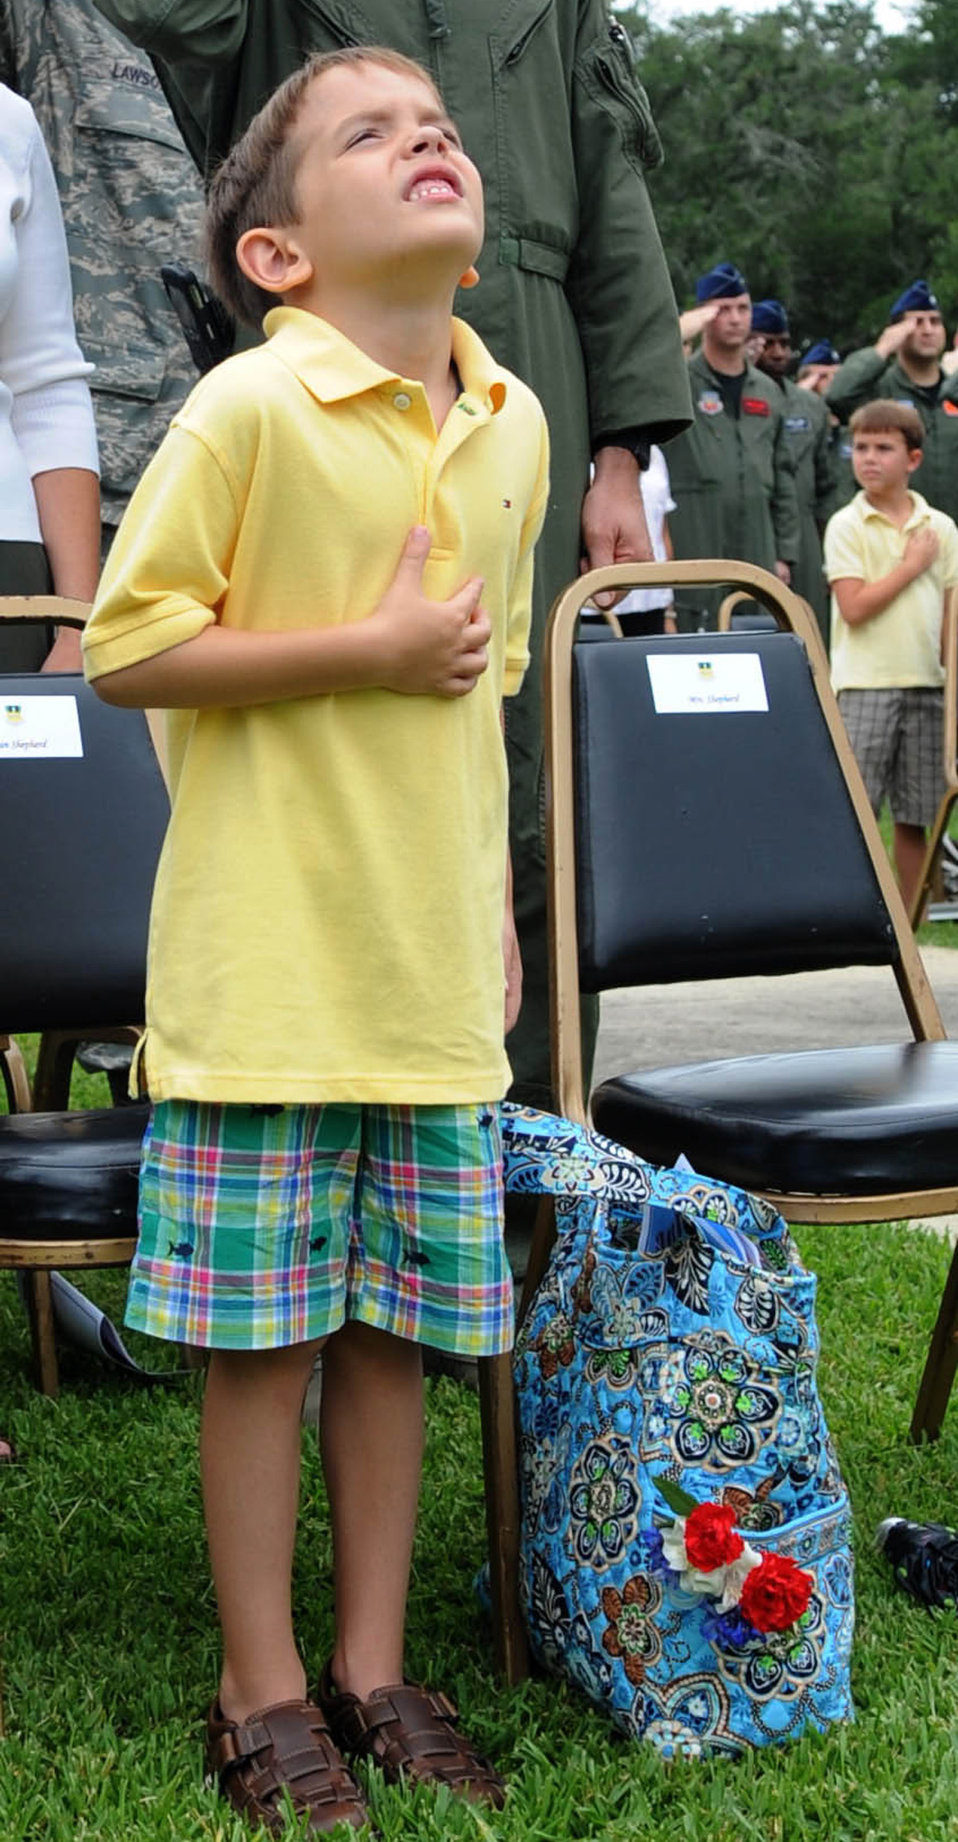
Remembering RAIDR 21

Noah, son of 1st Lt. Joshua Shepherd, places his hand over his heart during the playing of the national anthem as the flag is raised at the 2nd Bomb Wing flag pole July 21 during the RAIDR 21 Remembrance Ceremony. More than 200 Airmen, friends and family members attended the ceremony to remember the six fallen aircrew members who died in a crash July 21, 2008, while deployed to Andersen AFB, Guam. Lieutenant Shepherd was one of the crew members of the B-52 Stratofortress, call sign RAIDR 21.